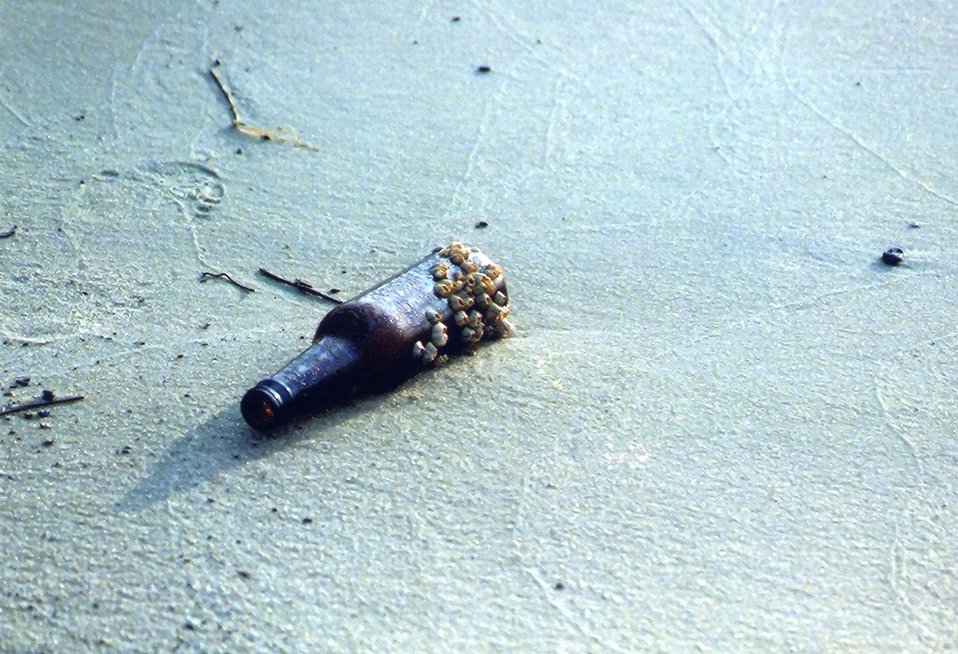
A barnacle encrusted beer bottle washed up on the shore.